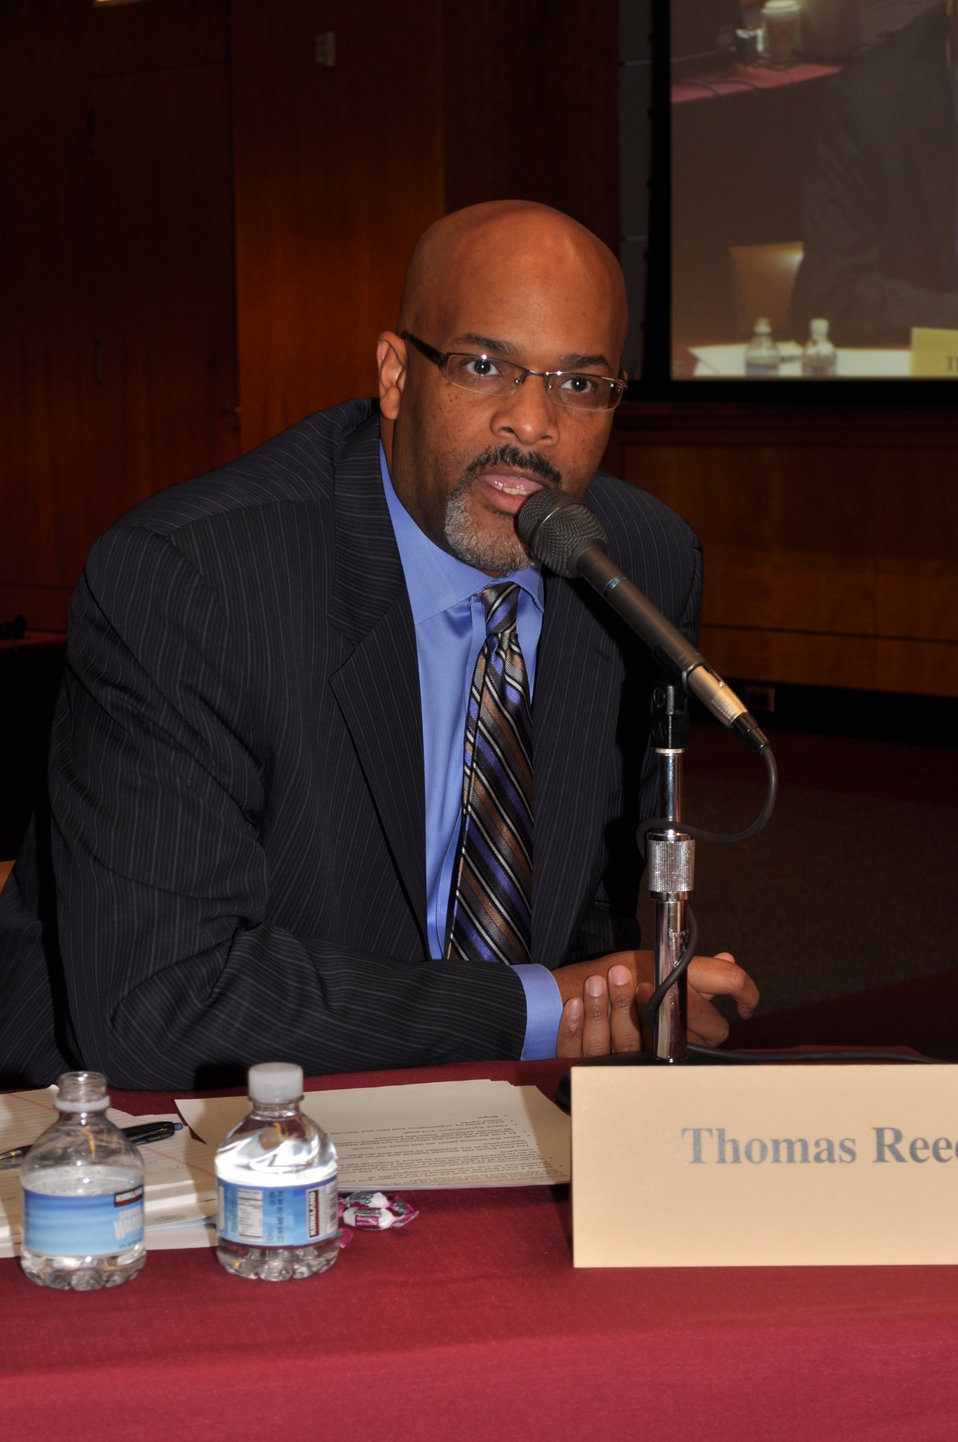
Capitalization Strategies

Workshop for small, minority and women owned businesses. Hosted by the Office of Communications Business Opportunities